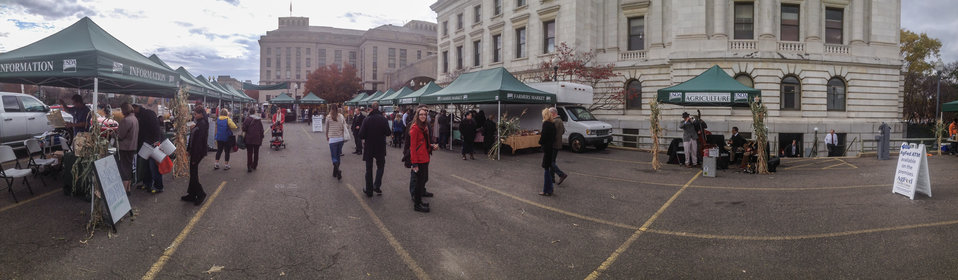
Virtual panorama of the U.S. Department of Agriculture (USDA) farmers market final outdoor market of the season and Harvest Festival at the USDA Whitten Building east parking lot in Washington, DC, on Friday, November 22, 2013.